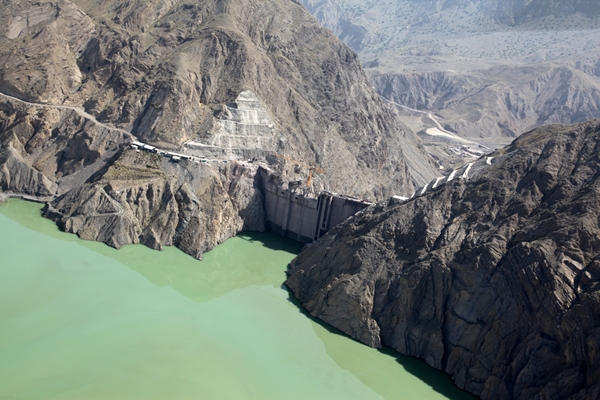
Gomal Zam 4